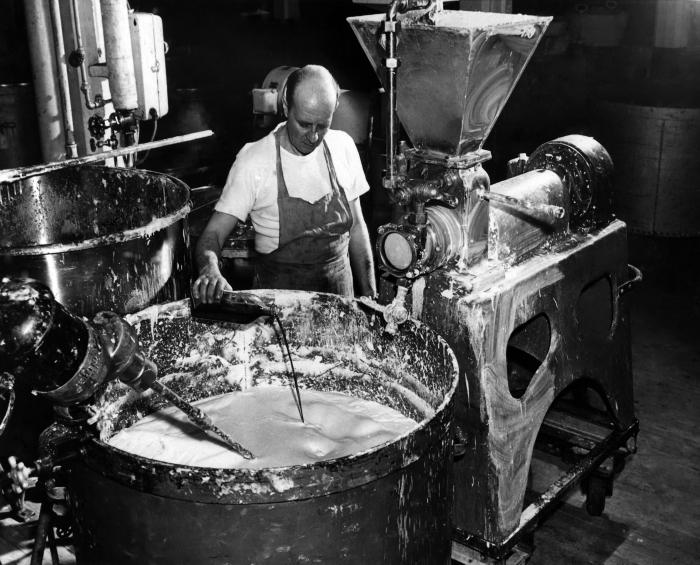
This historic image, provided by the Center for Disease Control's (CDC), National Institute for Occupational Safety and Health (NIOSH), depicted a highly-skilled industrial worker formulating a vat of anti-persperant cream at a pharmaceutical company factory. The image was published in the July, 1948, issue of the 'Industrial Bulletin, New York', Pg. 3, and you'll note that the worker was not wearing gloves, nor was he wearing any filtered breathing devices or goggles, all of which would have protected him from noxious vapors, and accidental spatter leading to skin, or eye contamination.In gaining a better understanding of workplace hazards, through hands-on and on-site information acquisition, protocol-formulating bodies such as NIOSH, are better able to create a safer workplace through substantiation of appropriate safety regulations.